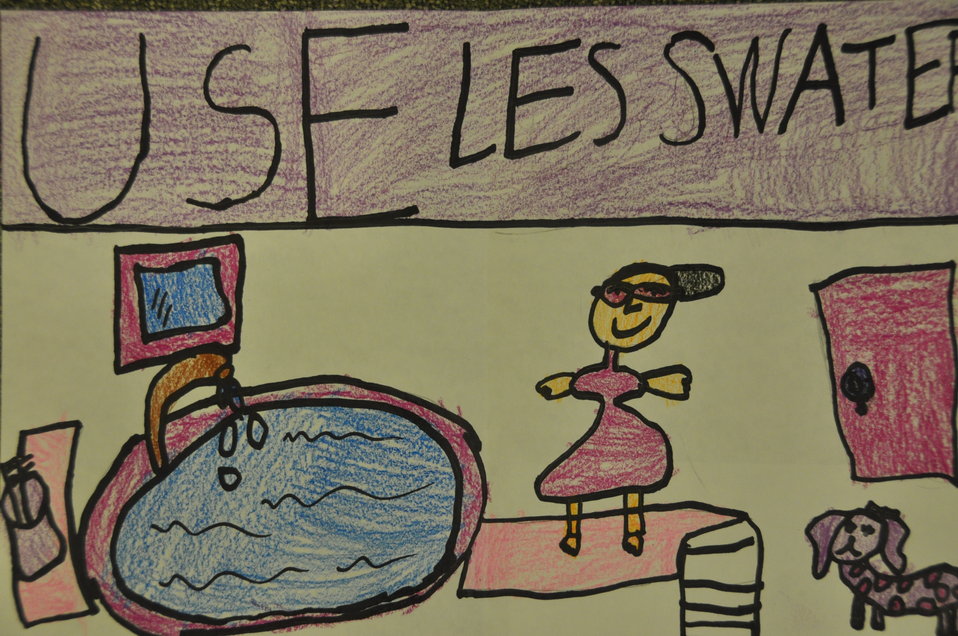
Ling, Grade 1, Connecticut